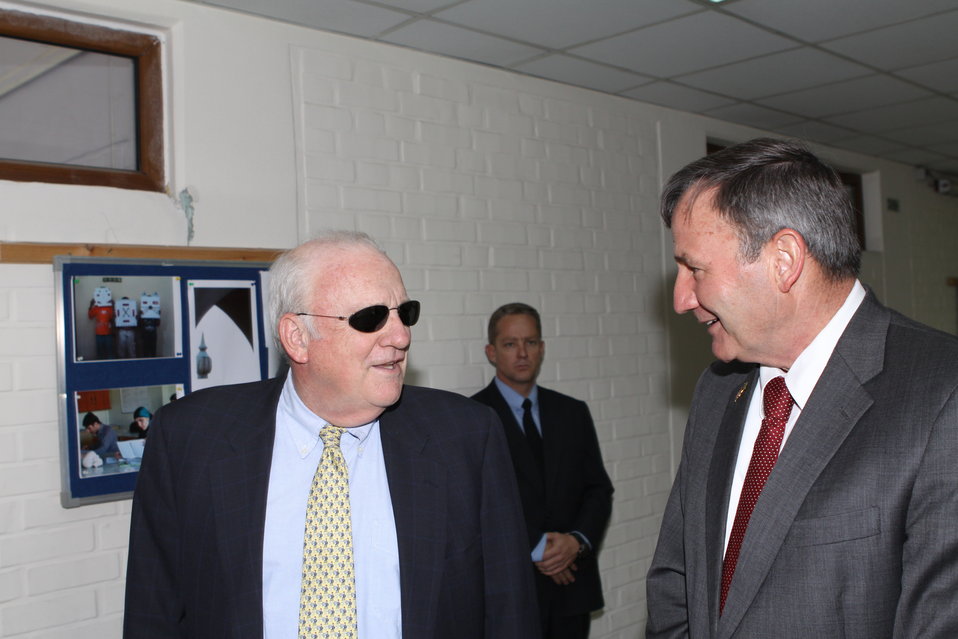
100526 AUAF Graduation 038